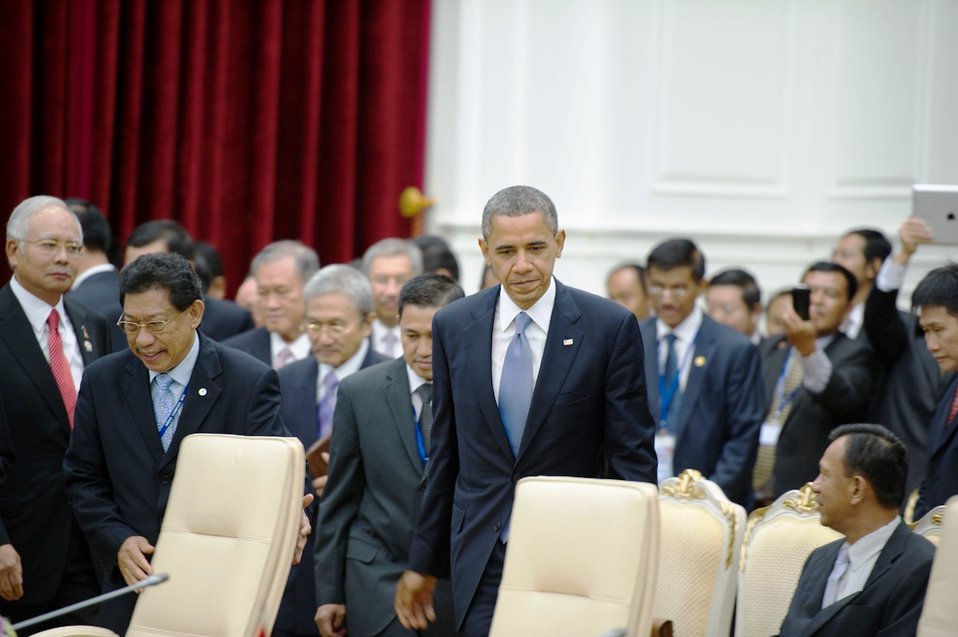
President Obama Participates in the ASEAN-U.S. Leaders' Meeting

U.S. President Obama participates in the ASEAN-United States Leaders' Meeting at the Peace Palace in Phnom Penh, Cambodia, November 19, 2012. President Obama is the first U.S. President to visit Cambodia.